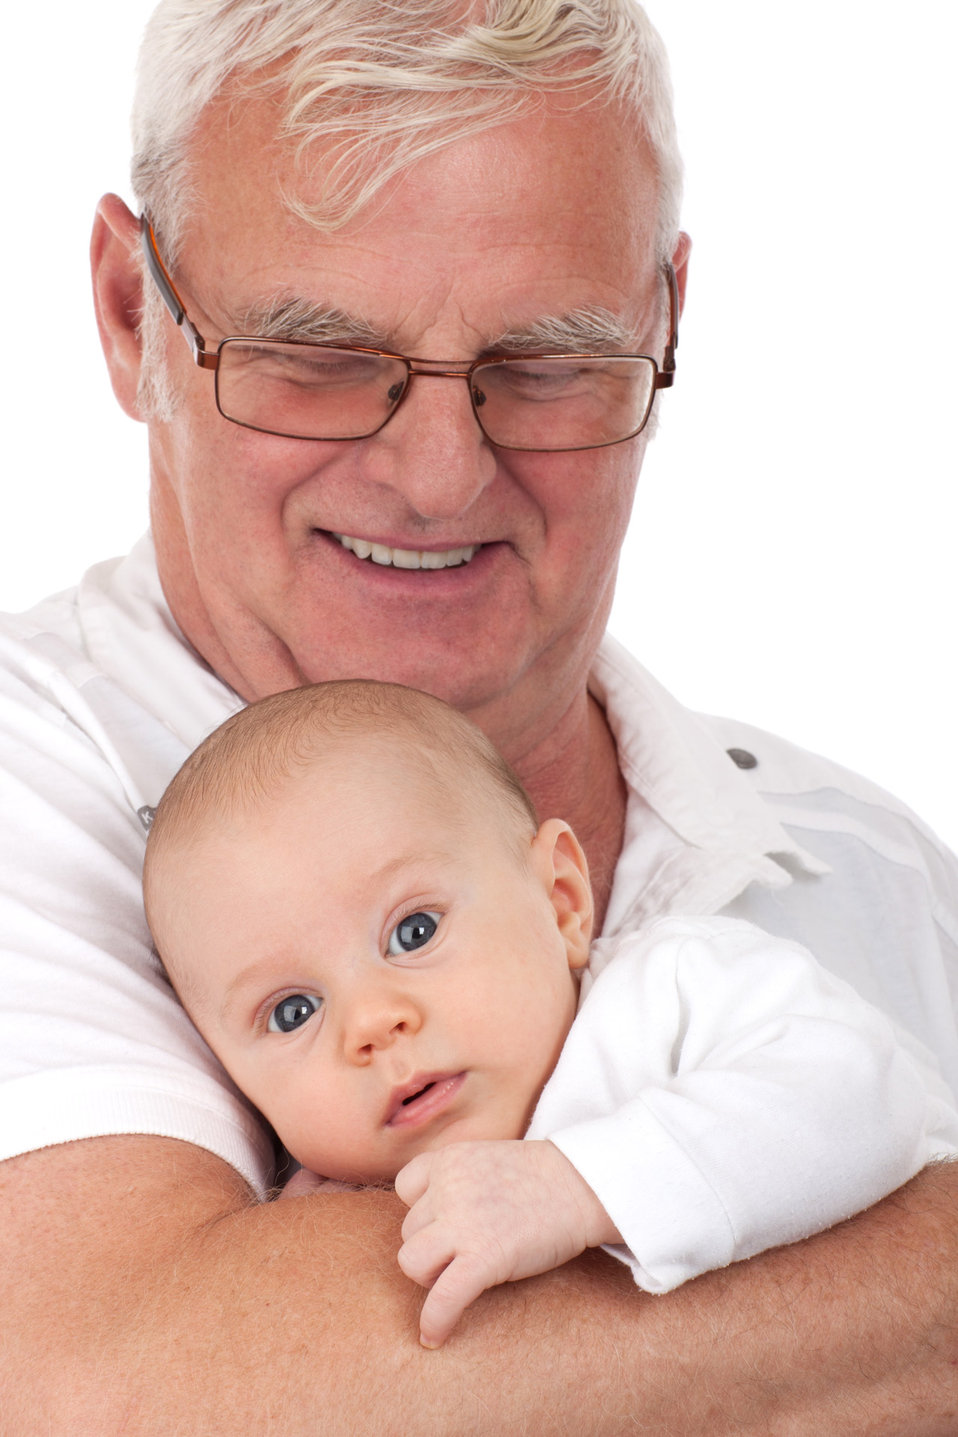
Grandfather and grandson isolated on white background.